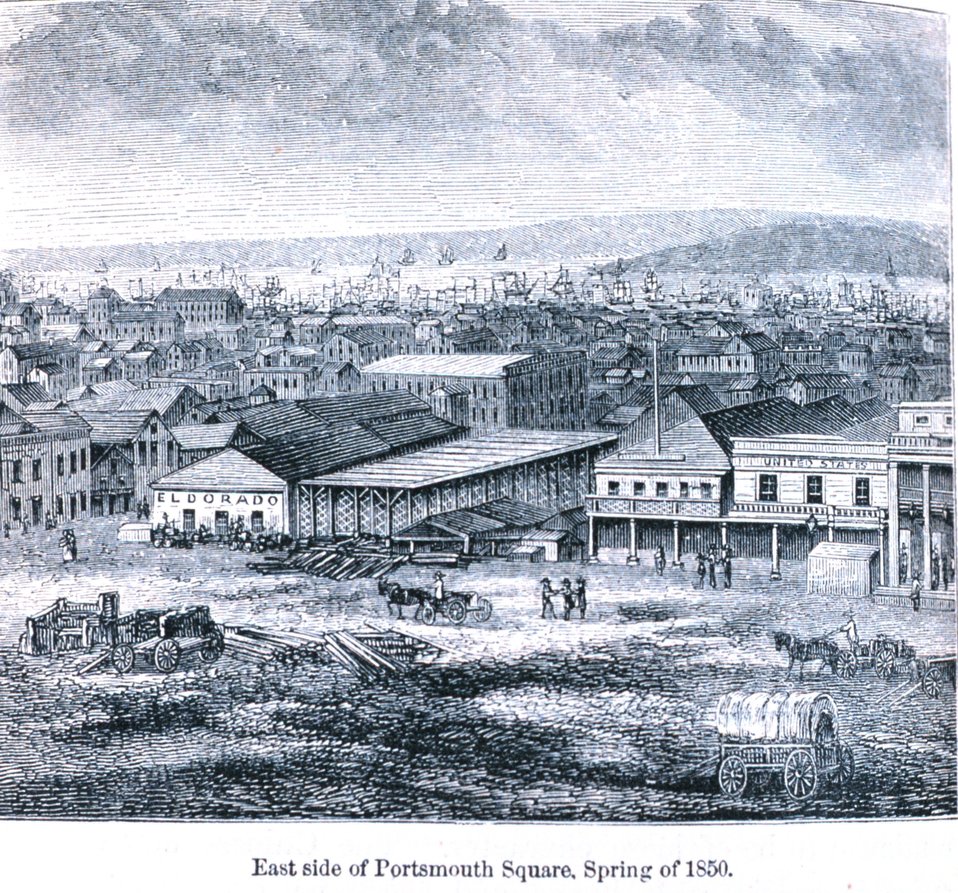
East side of Portsmouth Square, spring of 1850. In: 'The Annals of San Francisco'. Frank Soule, John Gihon, and James Nesbit. 1855. Page 358. D. Appleton & Company, New York. F869.S3.S7 1855.